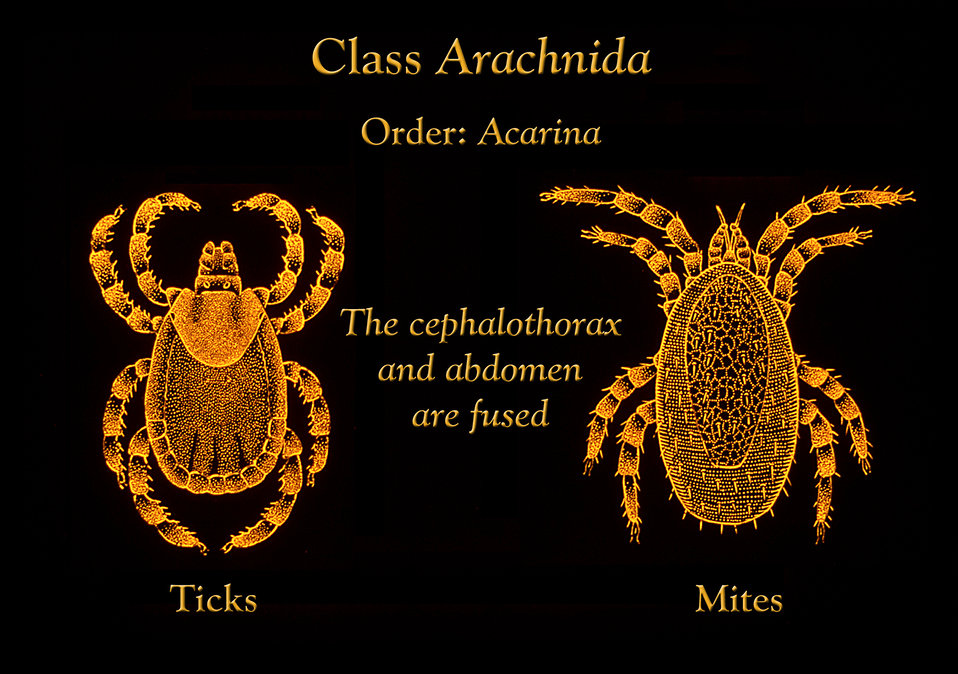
This illustration depicts the anatomic features found in both ticks and mites, each group belonging to the order Acarina.